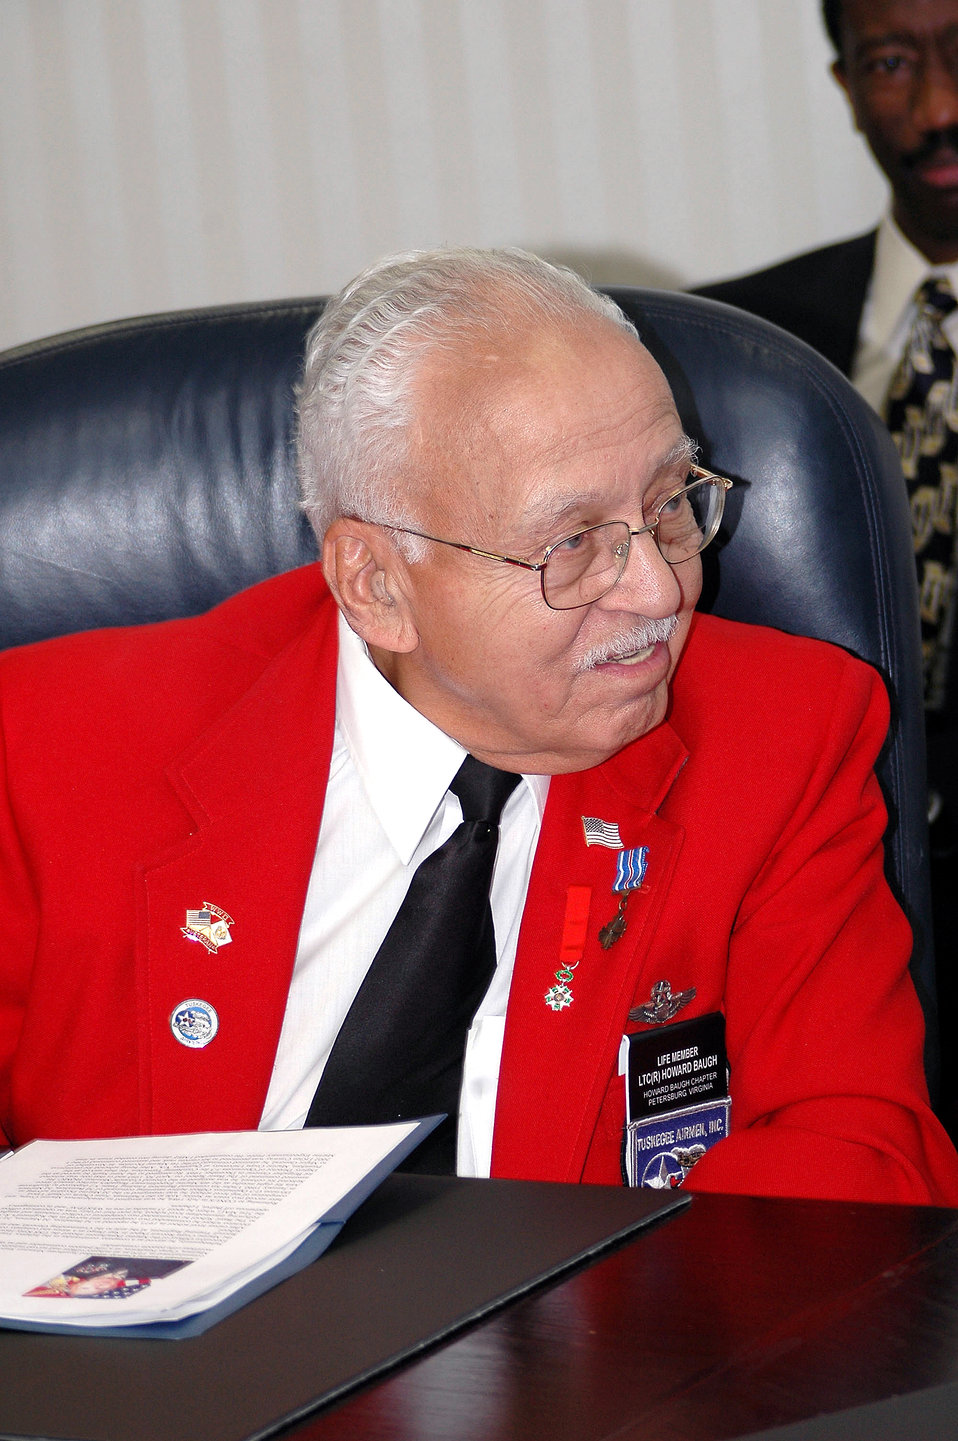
Tuskegee Airmen

WASHINGTON -- Retired Lt. Col. Howard Baugh is one the Tuskegee Airmen that visited the Pentagon at the invitation of the Secretary of Defense. The pioneering Airmen made their visit Nov. 10. Colonel Baugh flew P-40 Warhawk and P-51 Mustang aircraft, among others, between 1942 and 1947. In all, he flew 135 combat missions during World War II.